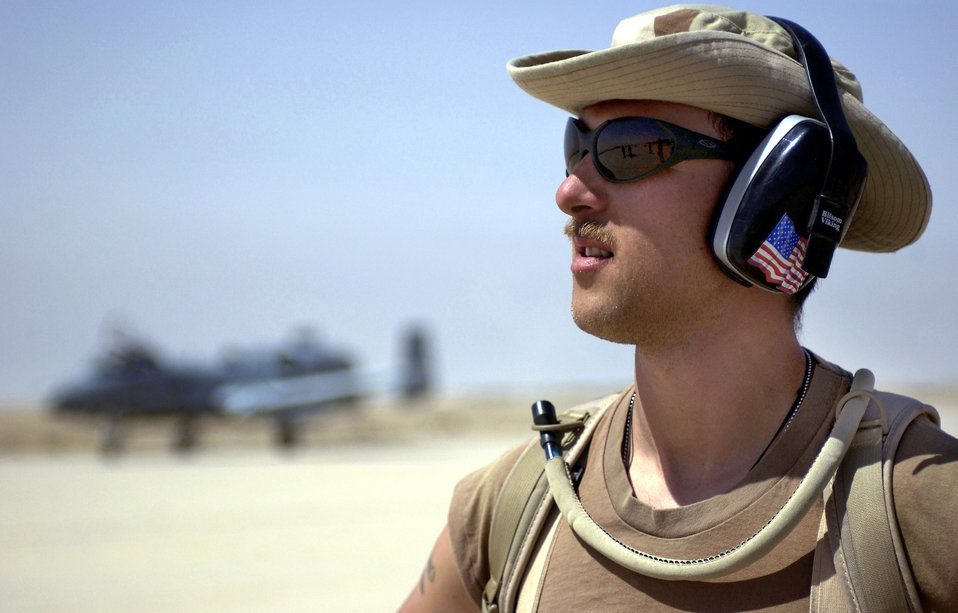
Foster

OPERATION IRAQI FREEDOM -- Staff Sgt. James Foster waits for an A-10 Thunderbolt II to taxi to its parking spot April 3 at a forward-deployed location in southern Iraq. Foster is a weapons loader currently assigned to the 392nd Air Expeditionary Wing.